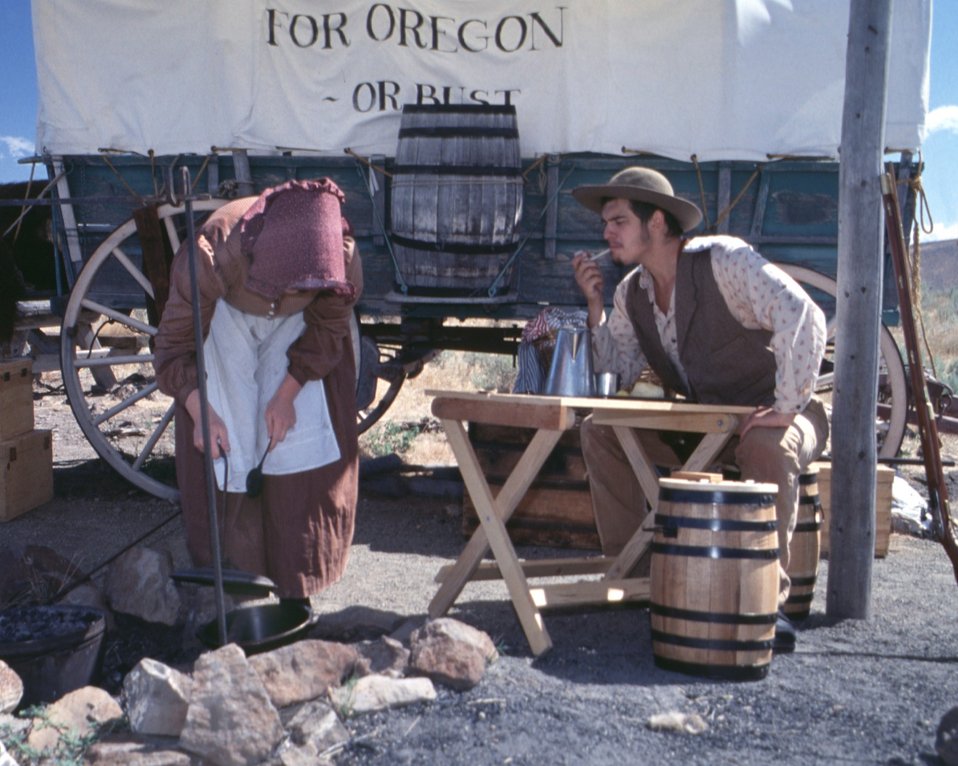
Rebecca Crow and Brandon Kames portray a pioneer couple at a wagon encampment.